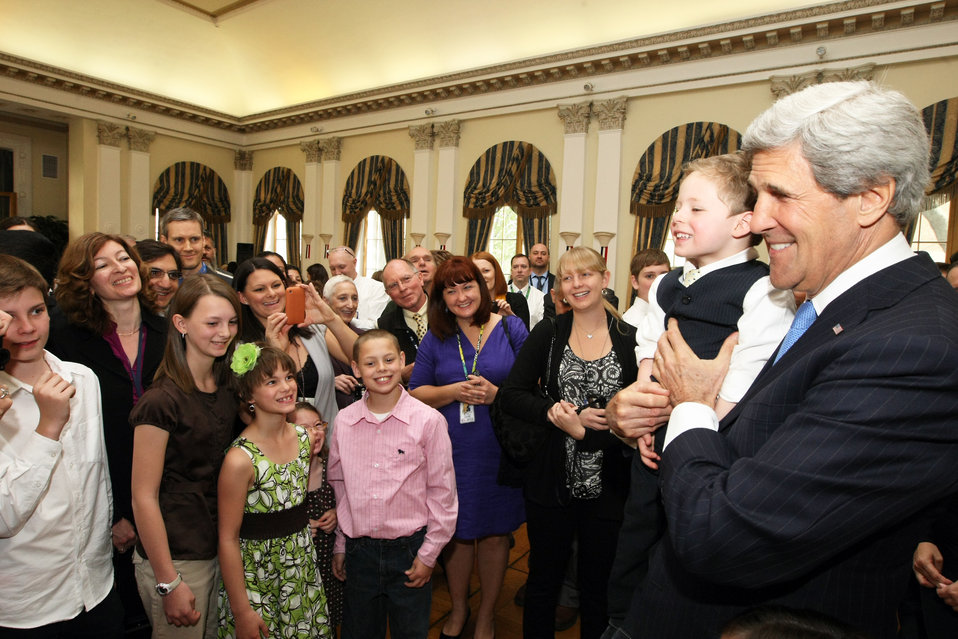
Secretary Kerry Speaks With His New Young Friend

U.S. Secretary of State John Kerry enjoys time with his new young friend, a child of an Embassy Moscow employee, at the Embassy's Meet and Greet at the U.S. ambassador's residence, the Spaso House, in Moscow, Russia, on May 8, 2013.